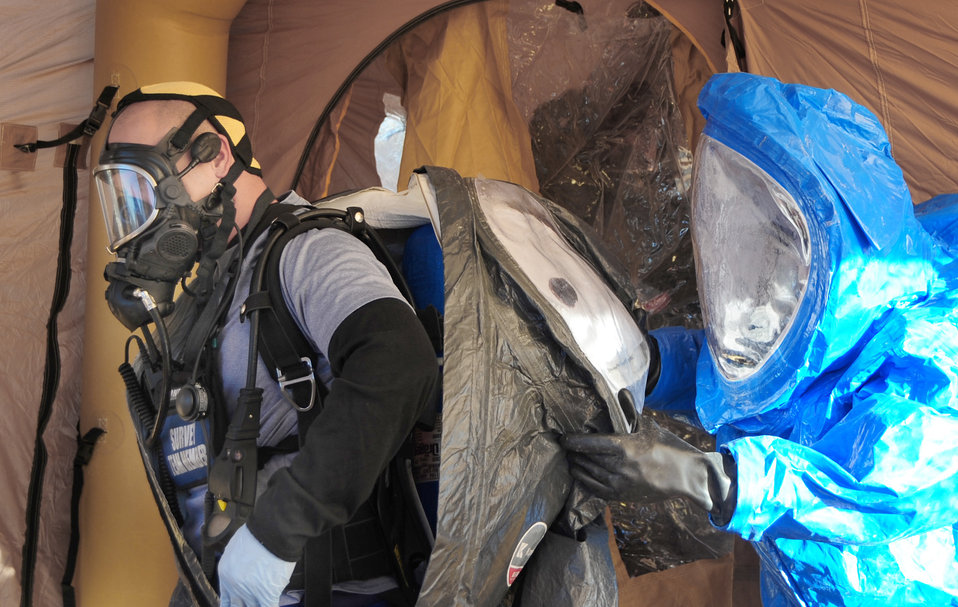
Ellsworth joint training

(Left) Staff Sgt. Danny Oaks gets help removing his chemical protective suit during a joint training mission Nov. 4, 2010, in Rapid City, S.D. The joint training included members from Ellsworth Air Force Base, S.D., the South Dakota National Guard and the Rapid City Fire Department. Sergeant Oaks is an 82nd Civil Support Team survey team member.